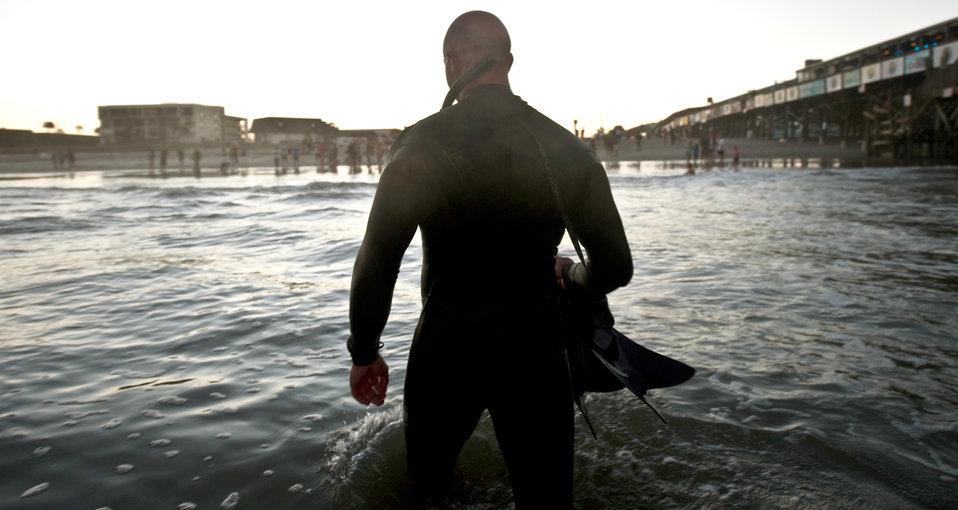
Pararescuemen participate in Air Force Week

Tech. Sgt. Wes Hufnagel emerges from the Atlantic Ocean after jumping from an HC-130P/N King during a freefall rescue demonstration Oct. 27, 2010, at Cocoa Beach, Fla. The demonstration was part of Air Force Week Cocoa Beach, a weeklong event aimed at showcasing Air Force capabilities and increasing public awareness. Sergeant Hufnagel is assigned to the 920th Rescue Wing at Patrick Air Force Base, Fla.